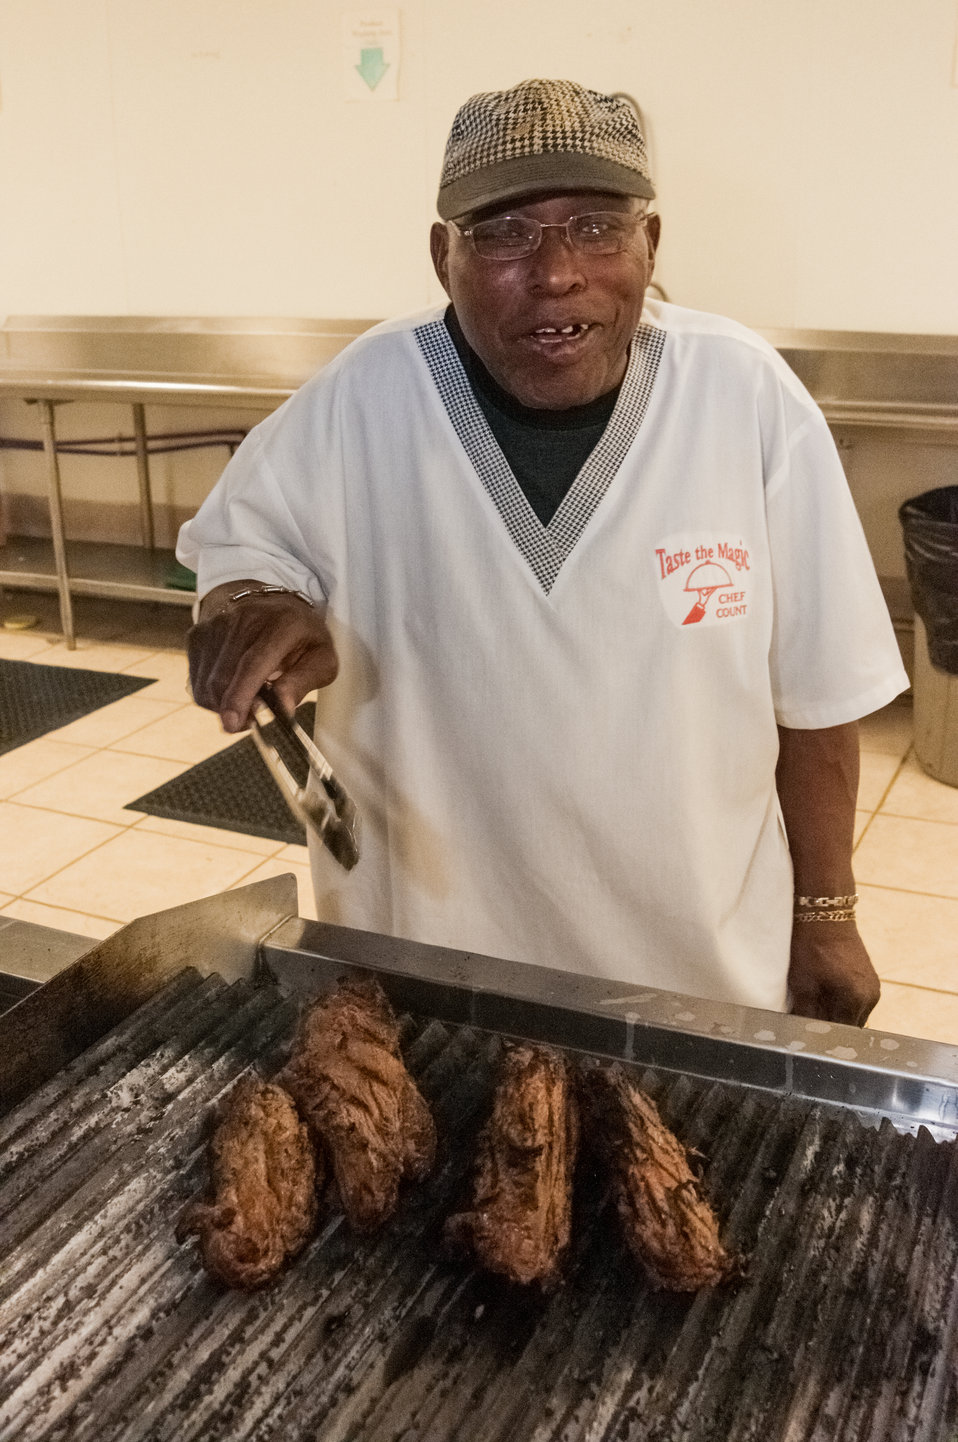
Chef Count Lofton prepares beef brisket in the incubator kitchen at the East Baker Historical Society Community Center in Newton, Baker County, GA on Mar. 7, 2013. The East Baker Historical Society Community Center secured a U.S. Department of Agriculture (USDA) Rural Development (RD) Community Facilities (CF) Loan for the kitchen that enabled residents to prepare catered meals and to prepare and package food products. The USDA Strike Force Initiative has designated Baker County, GA as a Strike Force county selected to receive assistance to relieve persistent poverty in historically high-poverty counties.